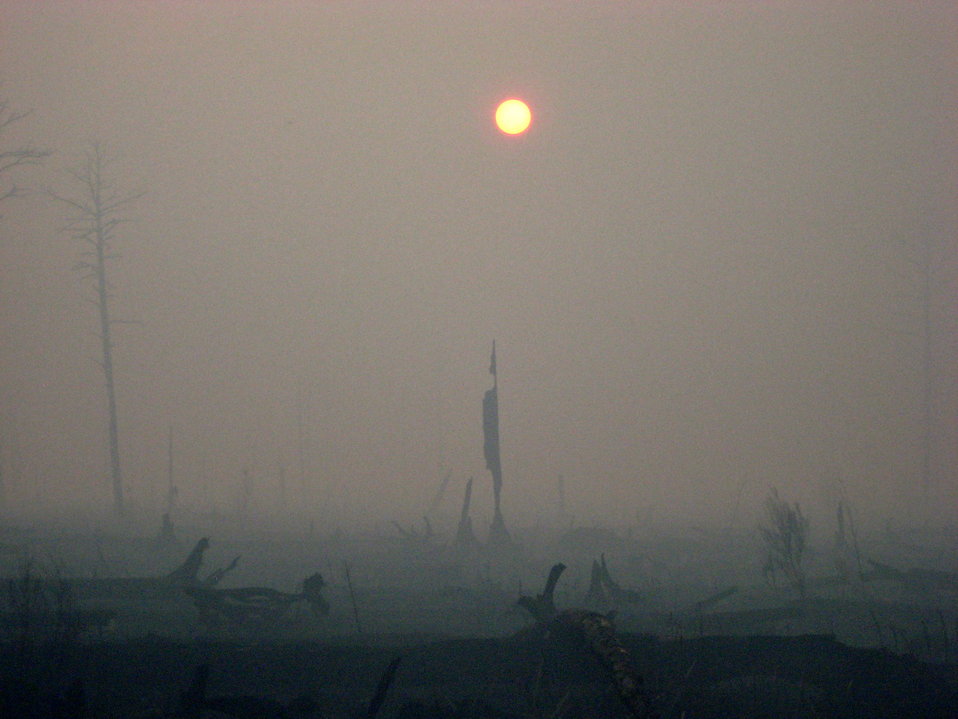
Sun, smoke, and snags

Suffolk, VA, August 2011: The sun burns through thick peat smoke during the Lateral West Fire in Great Dismal Swamp.